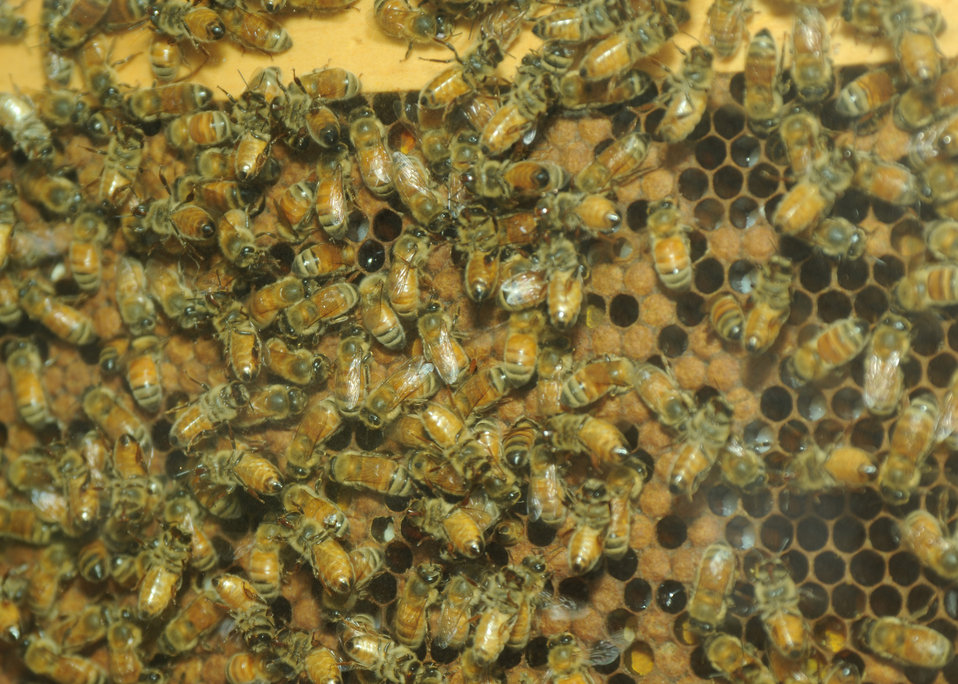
The bees on display at a Healthy Garden Workshop on pollinators.